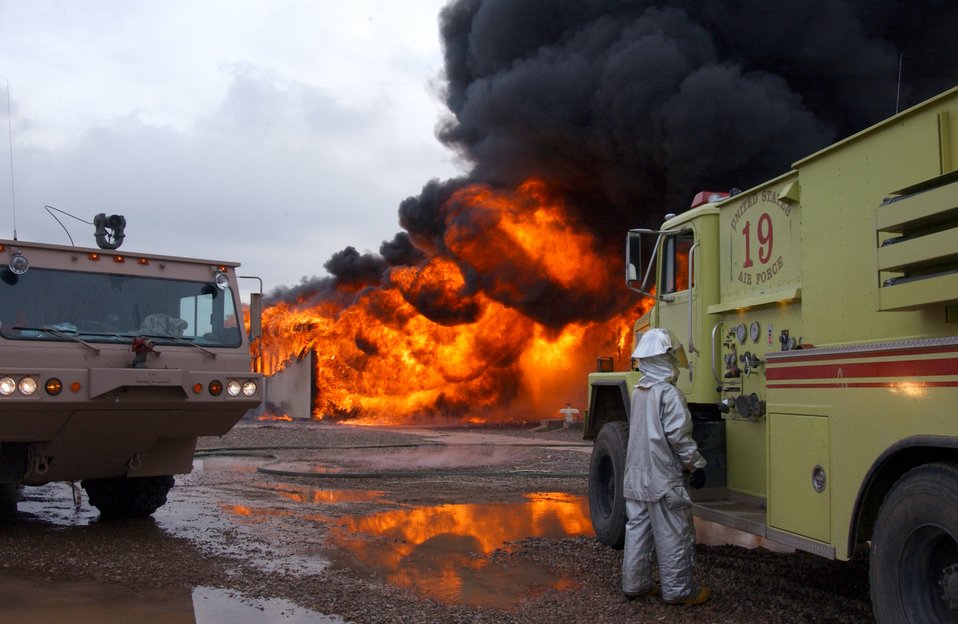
Live fire training

Four fire trucks and 24 firefighters are on hand for a live-fire training exercise at Balad Air Base, Iraq, Thursday, Feb. 16, 2006.